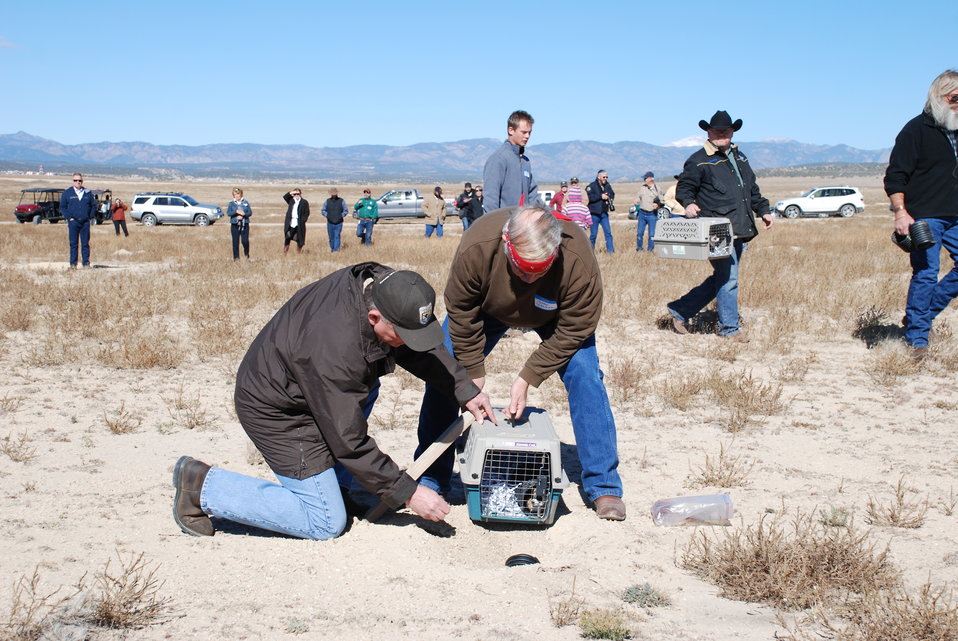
Black-footed Ferret Release

On Wednesday, October 30, 2013, thirty endangered black-footed ferrets were released onto cattle rancher Gary Walker's land, west of Pueblo, Colorado.

The release launched a potentially new way of preserving endangered species and was accomplished by way of a Safe Harbor Agreement (SHA). This SHA provides opportunities for private and Tribal landowners to volunteer their lands for reintroductions of this endangered species without affecting their land-use activities beyond mutually agreed-upon measures. It also extends these assurances to surrounding non-participating lands and other landowner interests. This SHA will be an important step in promoting the recovery of this iconic species.